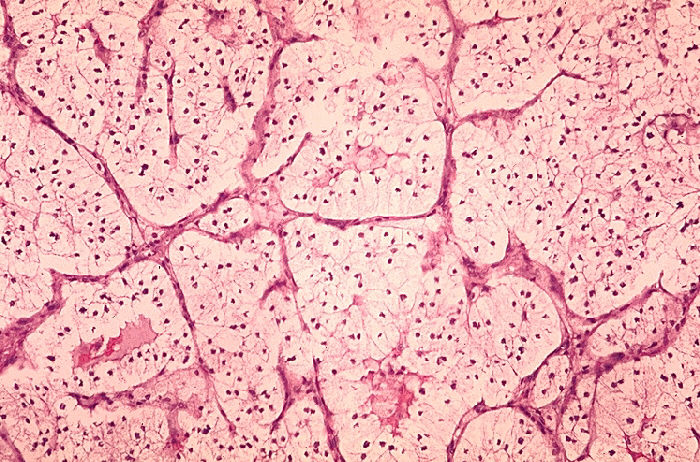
Histopathology of renal cell adenocarcinoma, kidney.